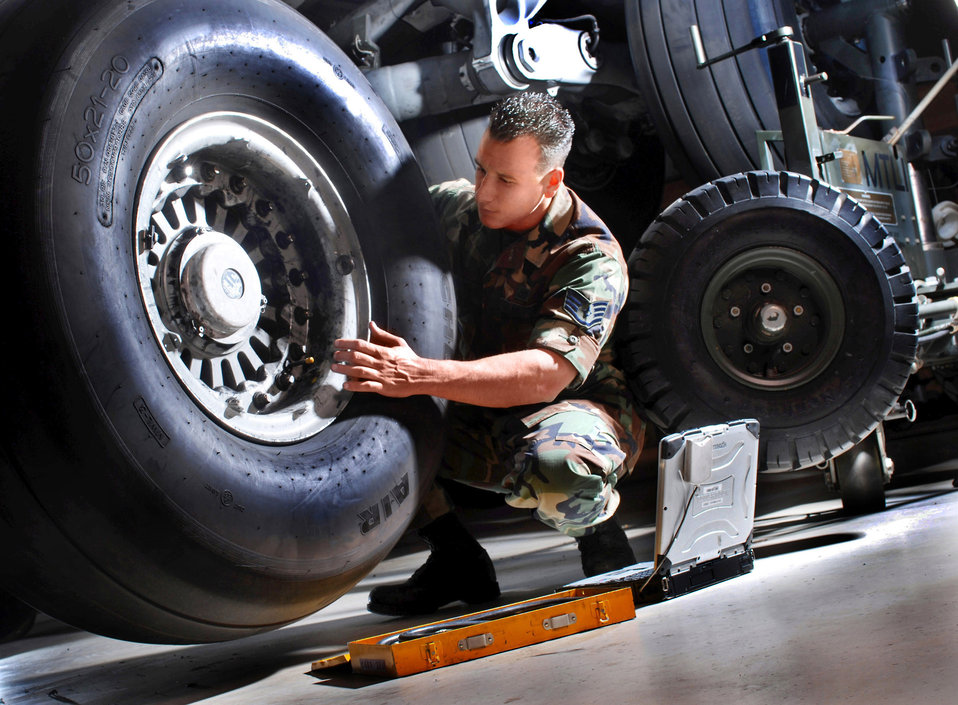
No leaks here

Staff Sgt. Brian Hicks checks the condition of a C-17 Globemaster III tire during a routine inspection June 19 at March Air Reserve Base, Calif. Sergeant Hicks is an aircraft mechanic from the 452nd Maintenance Squadron.